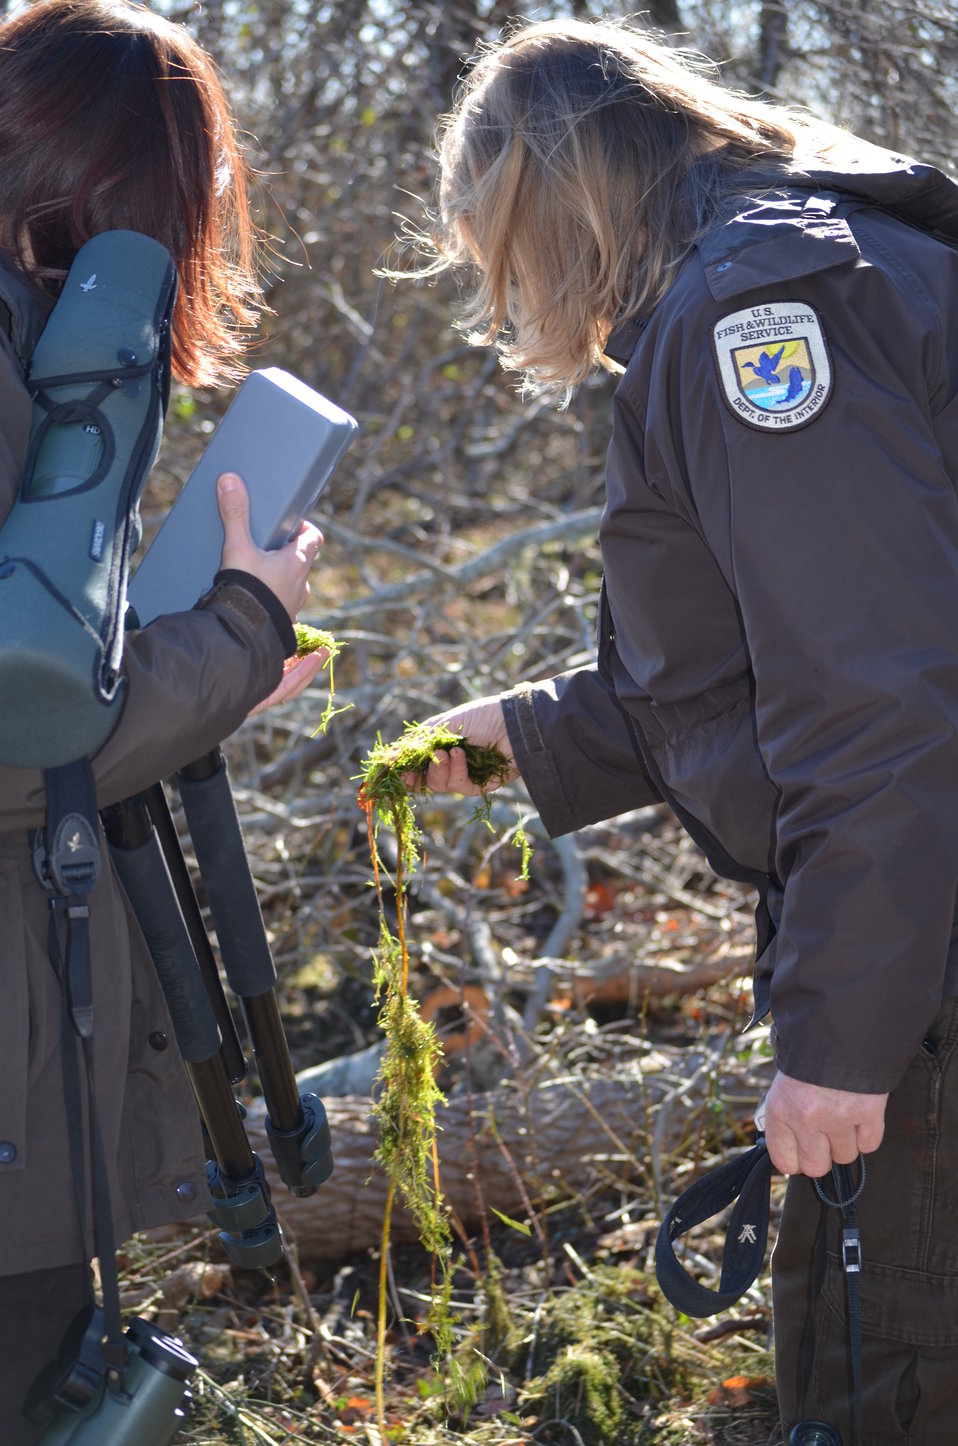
Vegetation (RI)

Trustom pond National Wildlife Refuge staff picked up pieces of the vegetation washed inland from the storm surge.